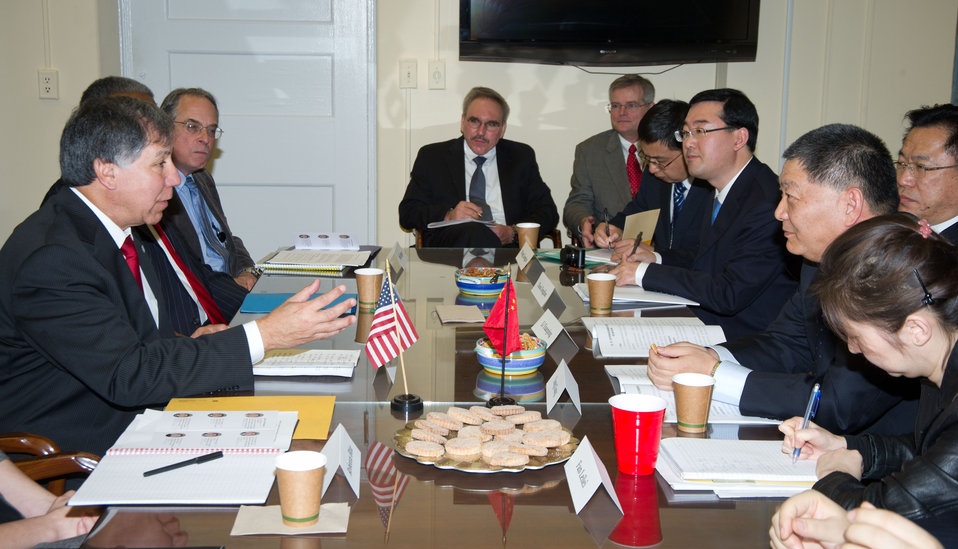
Agriculture Under Secretary for Marketing and Regulatory Programs Ed Avalos (left) talked with the General Administration of Quality Supervision, Inspection and Quarantine (AQSIQ) Vice Minister Yang Gang (third from right) from China on Tuesday, Feb. 14, 2012, in Washington, D.C.